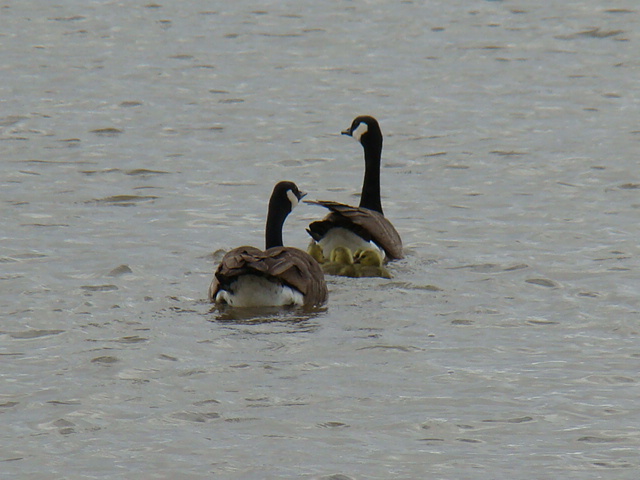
Canada Geese With Their Brood

The lands of the refuge were established to protect and provide habitat for migratory birds that cross State lines and international borders and are by law a Federal trust responsibility.
The refuge is of great value to waterfowl and shorebirds, as well as other migrating water-dependent bird species, because of the diversity of wetland and upland habitats that provide for the diverse life cycle needs of these species.